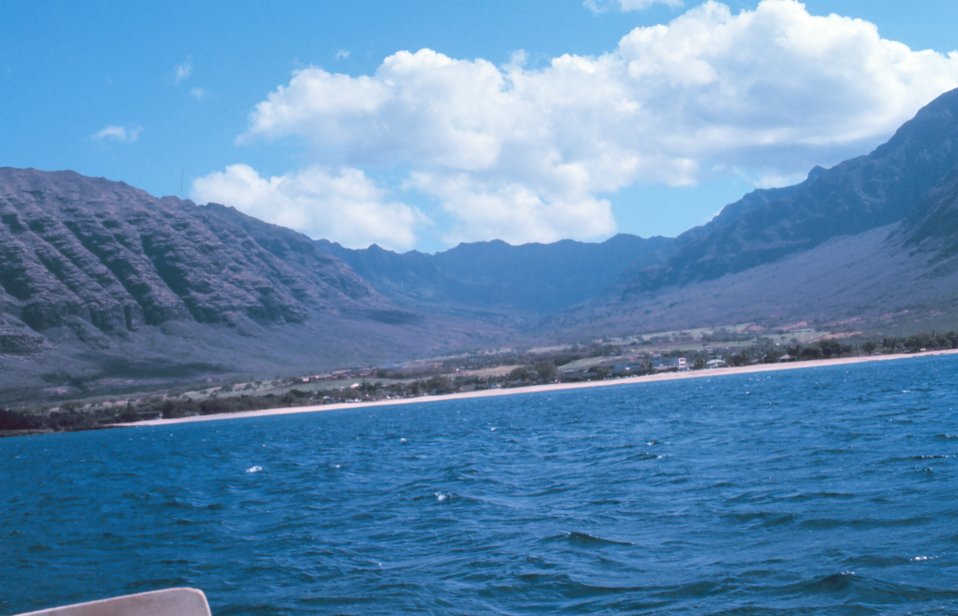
West coast south of Kaena Point